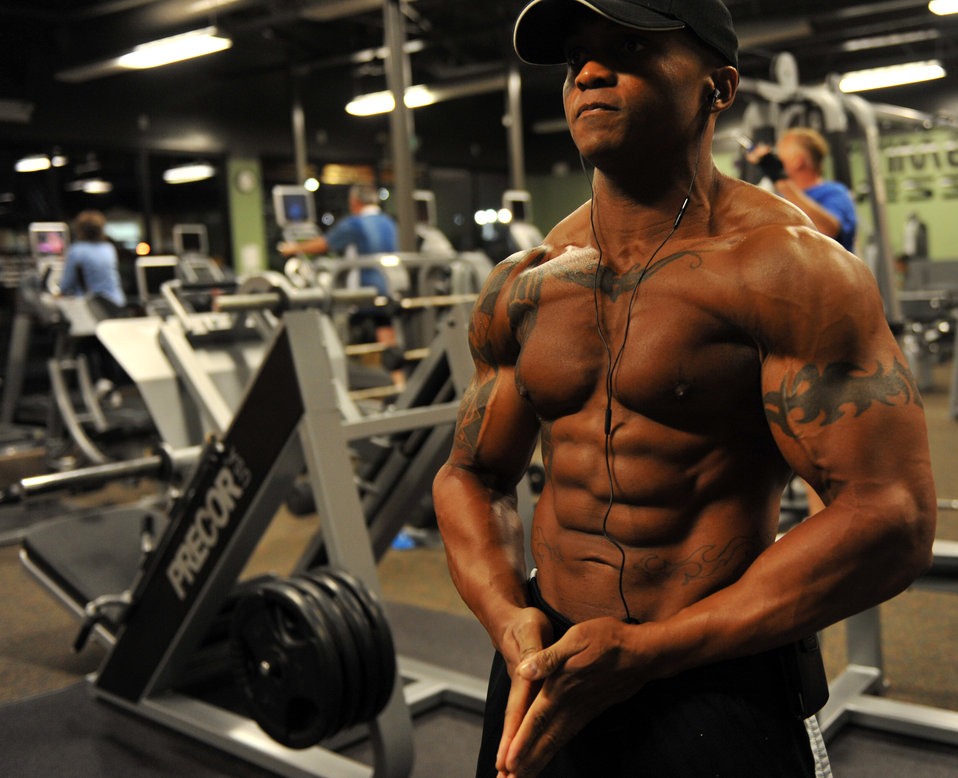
Posing with a tune

Master Sgt. LaJuan Fuller, 366th Civil Engineer Squadron first sergeant, practices posing to music he selected for his upcoming body-building competition to ensure his timing and poses are proper in Mountain Home, Idaho, April 25, 2012. Fuller uses has a membership at a gym off base which allows him to take his shirt off while practicing his poses and utilize a tanning bed to even out his tan lines before competitions.